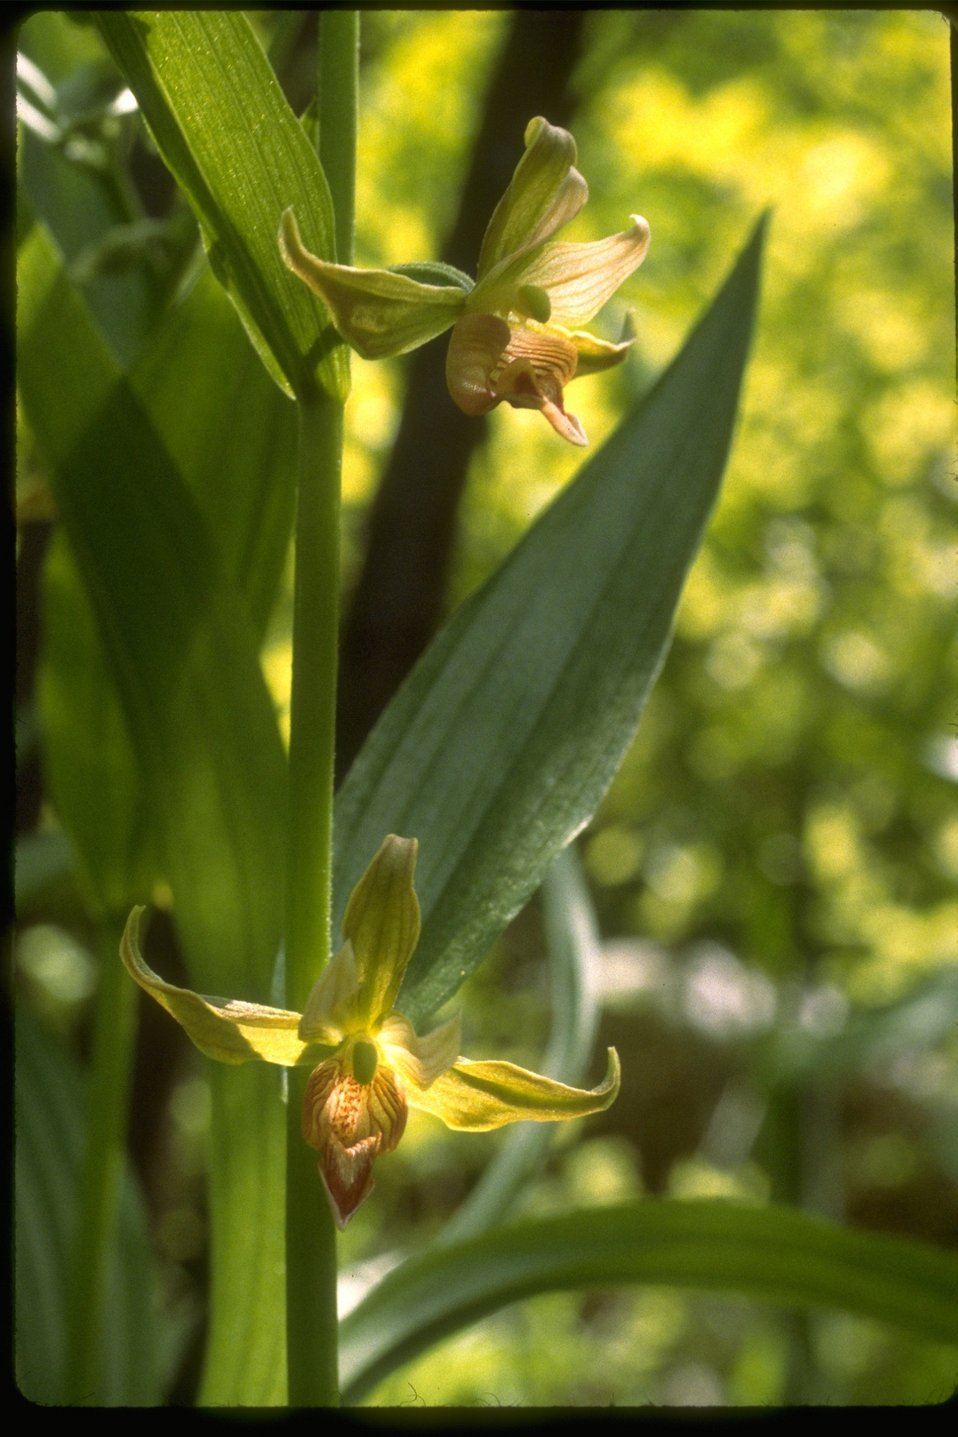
Rare orchid (Epipactis gigantea) found on Uncle Sam Mountain in Stevens County, Washington.